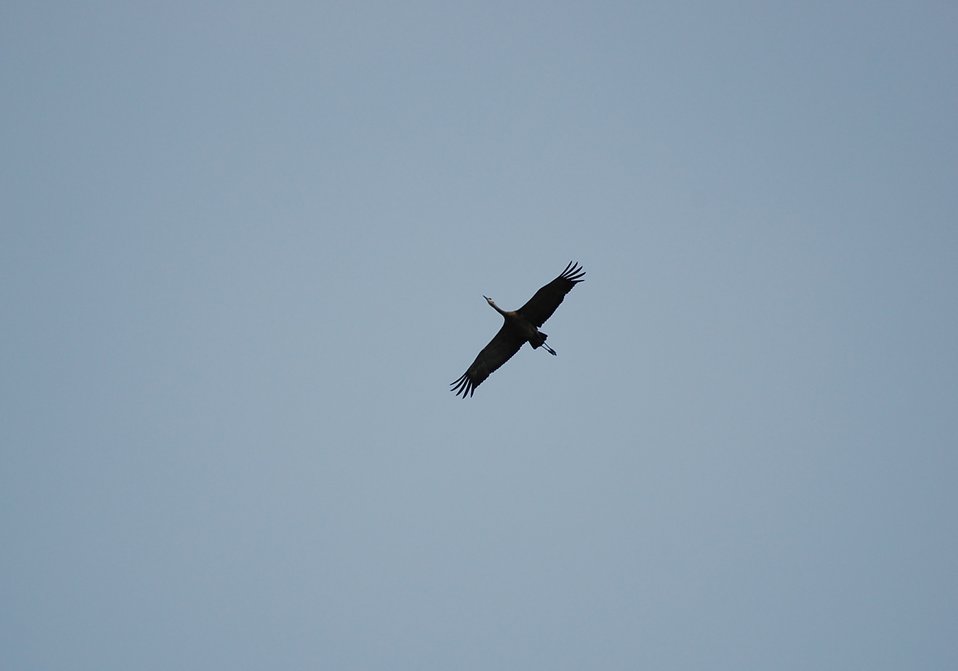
Sandhill Crane

Over Kinazarof Lagoon area, Izembek National Wildlife Refuge